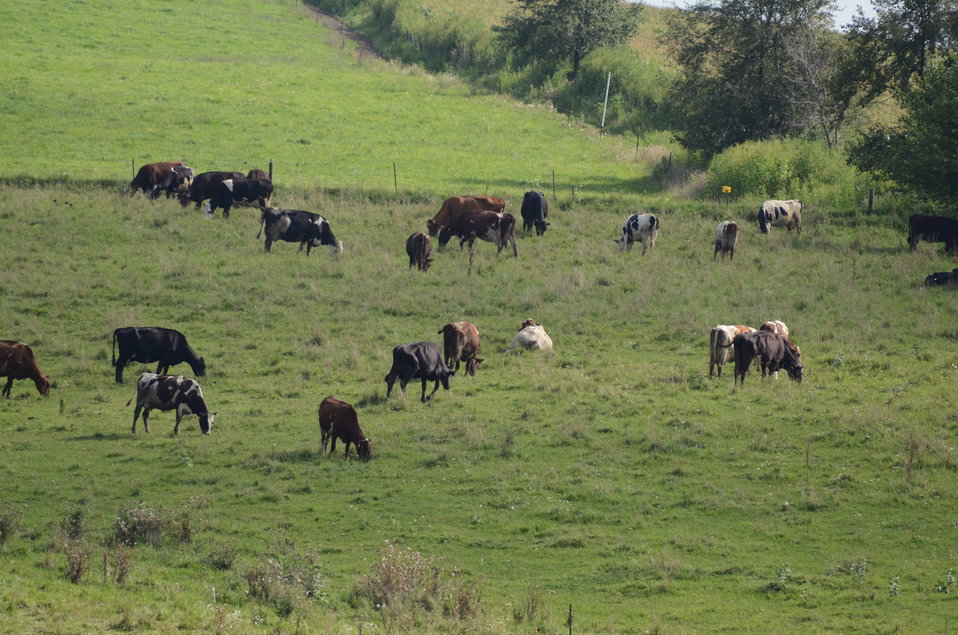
Dairy Farm near Poesta, IA, on Tuesday, Aug. 16, 2011.